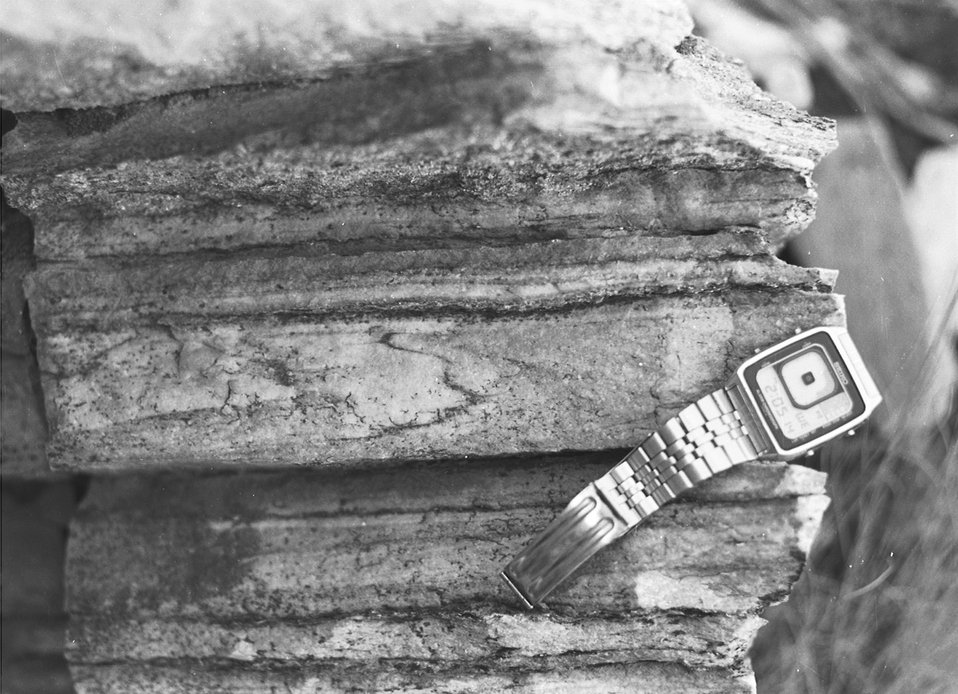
Cleavage in Oakley USRD Upper Snake River District